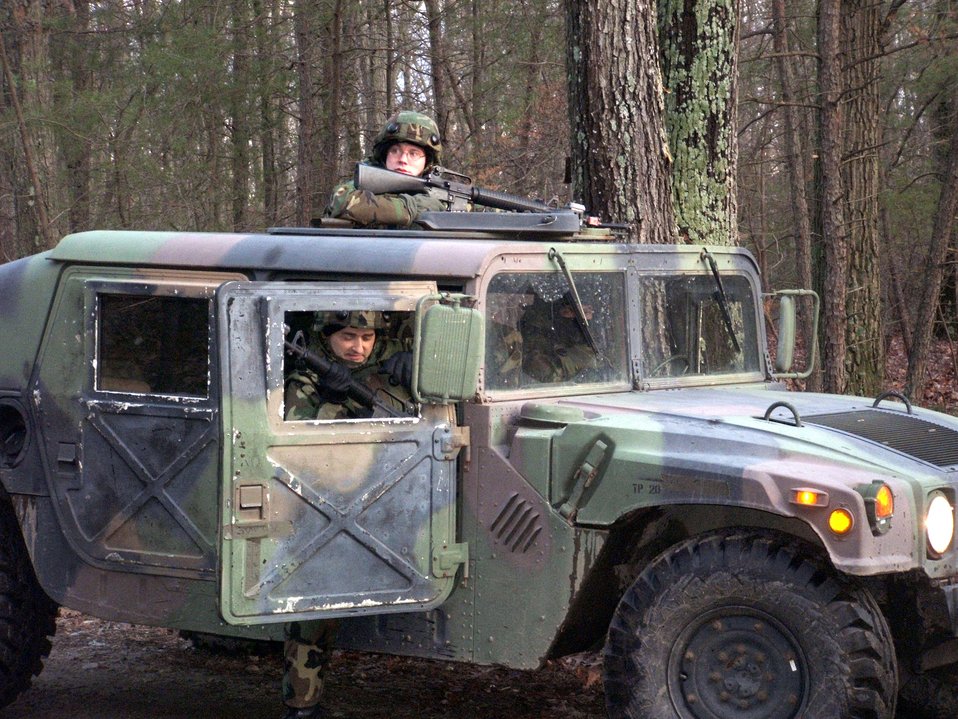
Contingency skills course

FORT DIX, N.J. (AFPN) -- Staff Sgt. Brenden Leahy mans the turret of a Humvee while Maj. Erik Troff gets out of the vehicle at a